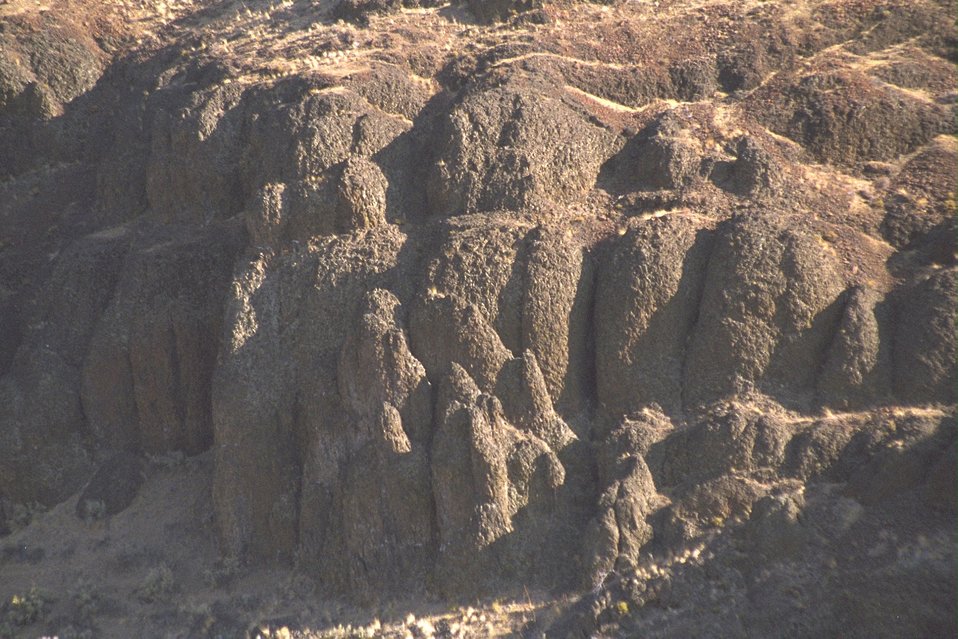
Lava cliffs near the John Day River.